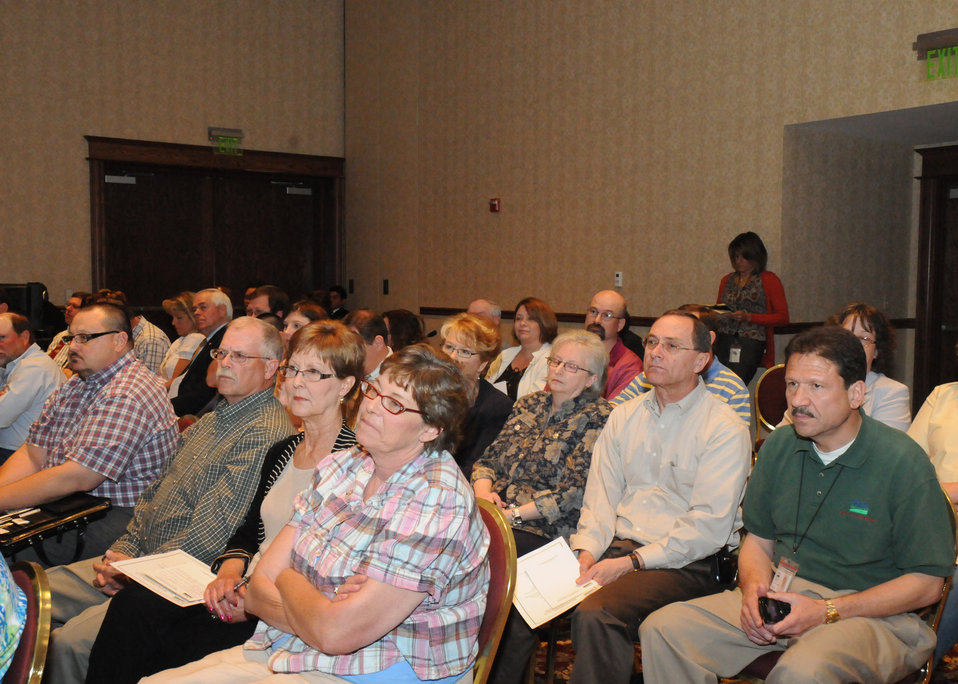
The U.S. Department of Agriculture (USDA) held the third of six Cultural Transformation Employee listening sessions in Kansas City, MO, on Wednesday, April 14, 2010. USDA employees expressed their concerns with issues at the Department and made suggestions for correcting them and improving the image of USDA. USDA photo 10di1309-198.